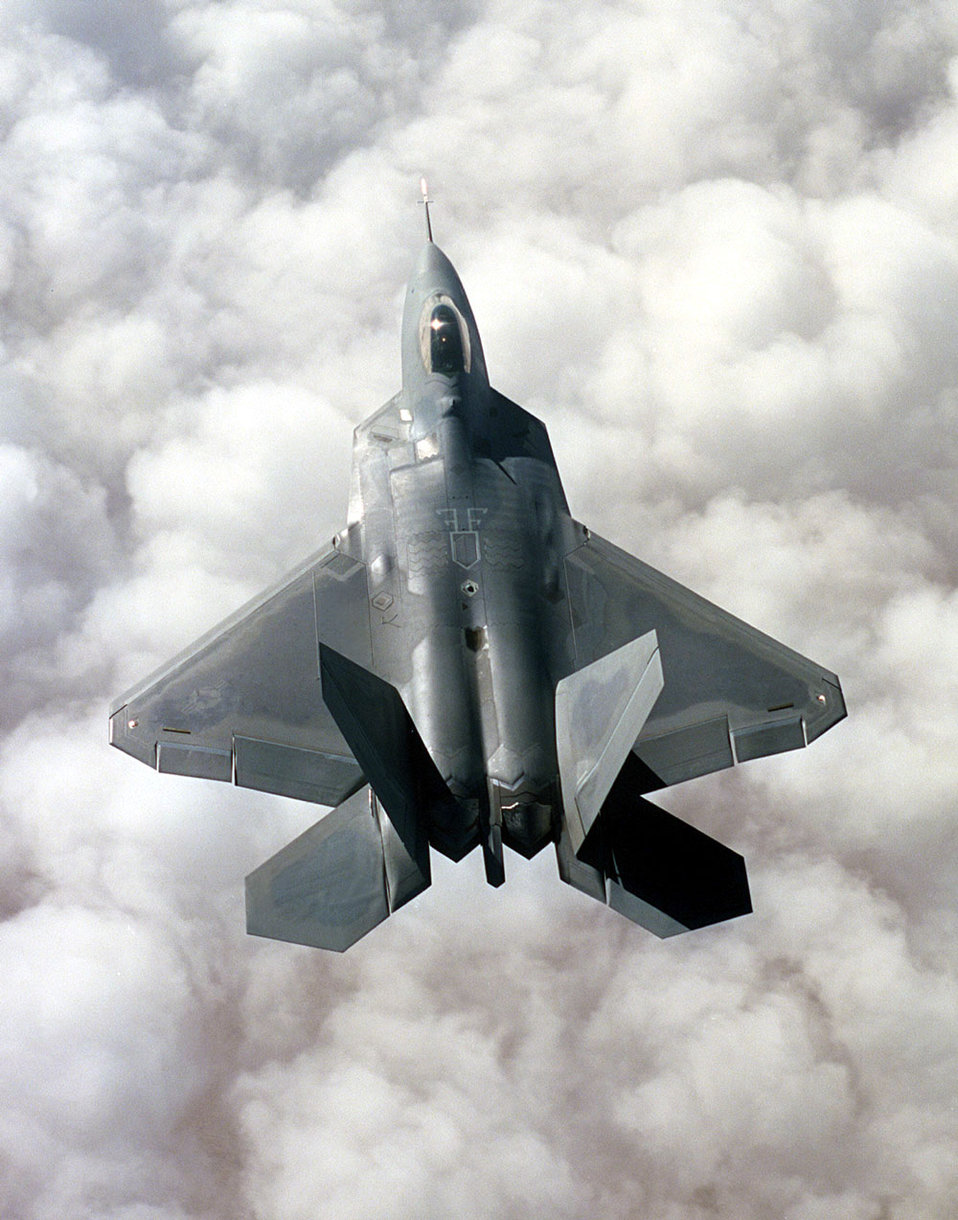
F/A-22 Raptor

FILE PHOTO -- The F/A-22 is an air-superiority fighter with improved capability over current Air Force aircraft. From the inception of the battle, the Raptor's primary objective will be to establish air superiority through the conduct of counter air operations. The F/A-22 also has an inherent air-to-surface capability. A combination of improved sensor capability, improved situational awareness, and improved weapons provides first-kill opportunity against the threat.